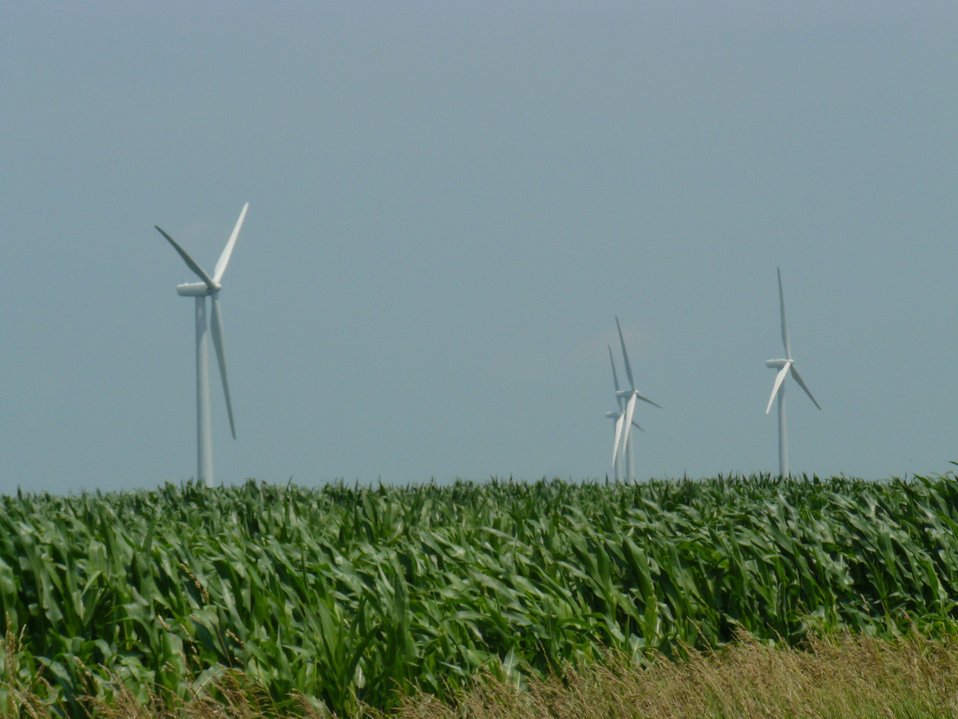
Wind turbines in corn field